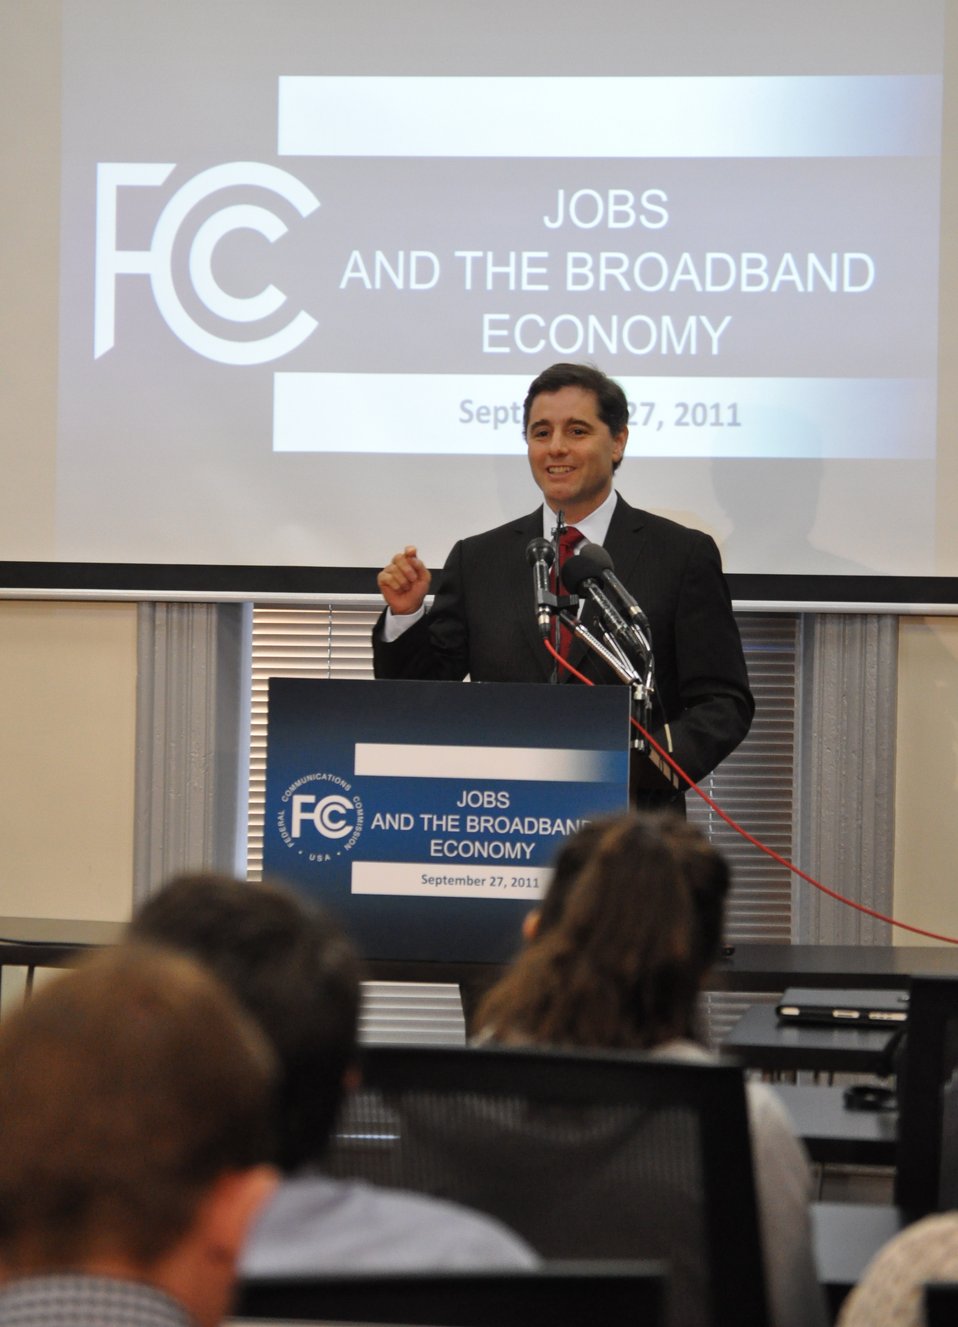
Jobs and the Broadband Economy

FCC Chairman Genachowski